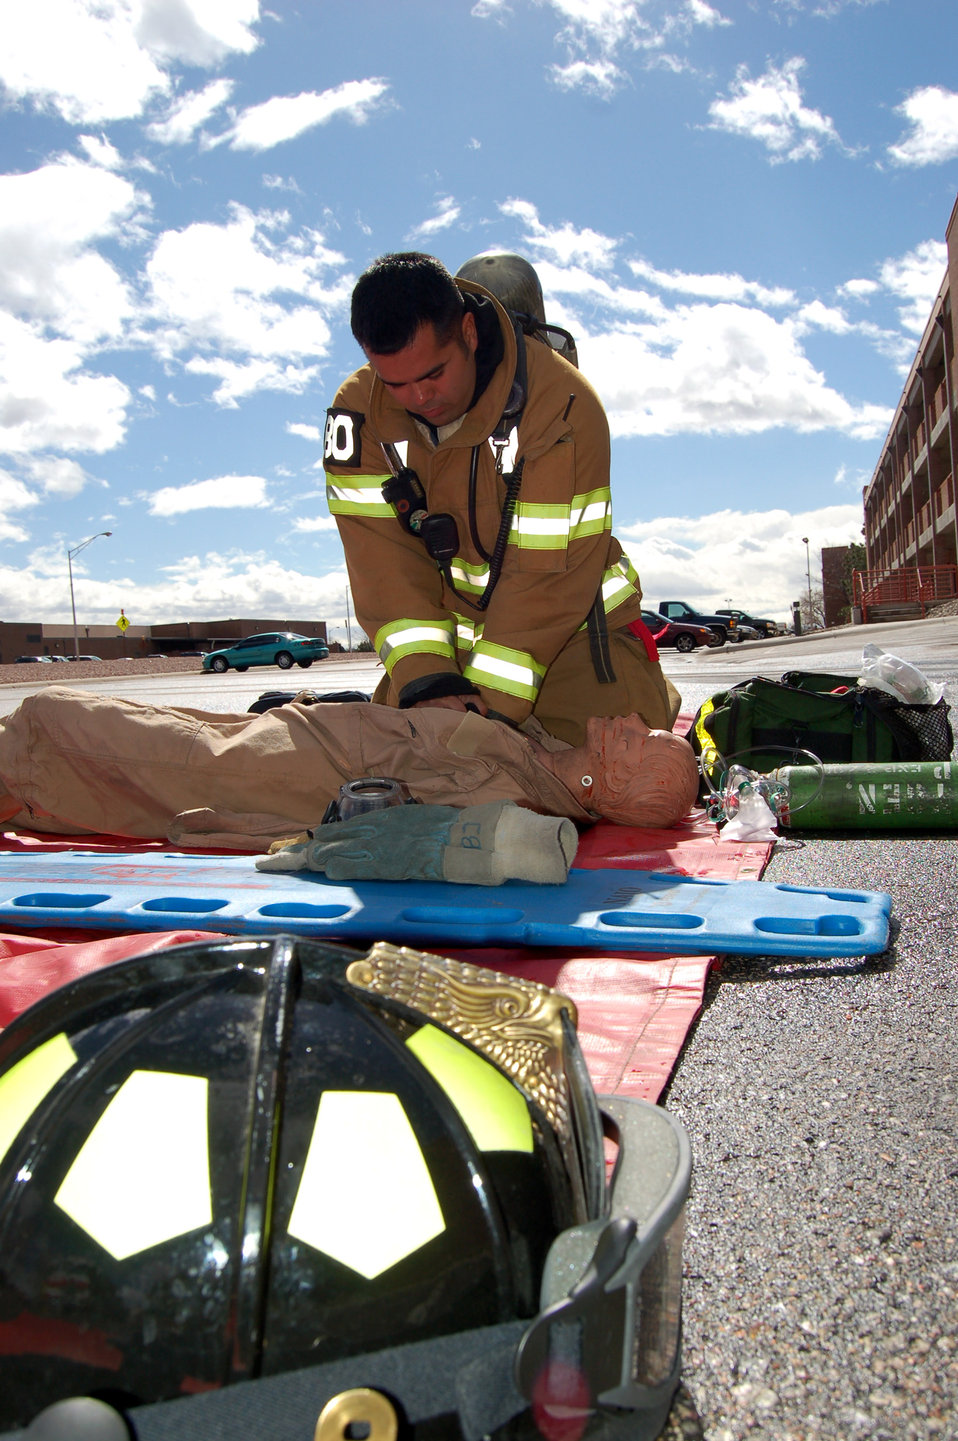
Firefighter lives his childhood dream

Staff Sgt. Timmi Bjorsevik performs CPR on a simulated patient during a firefighting exercise April 10 at Peterson Air Force Base, Colo. The training is essential to keeping the firefighters sharp and ready to perform their duties at a moment's notice.